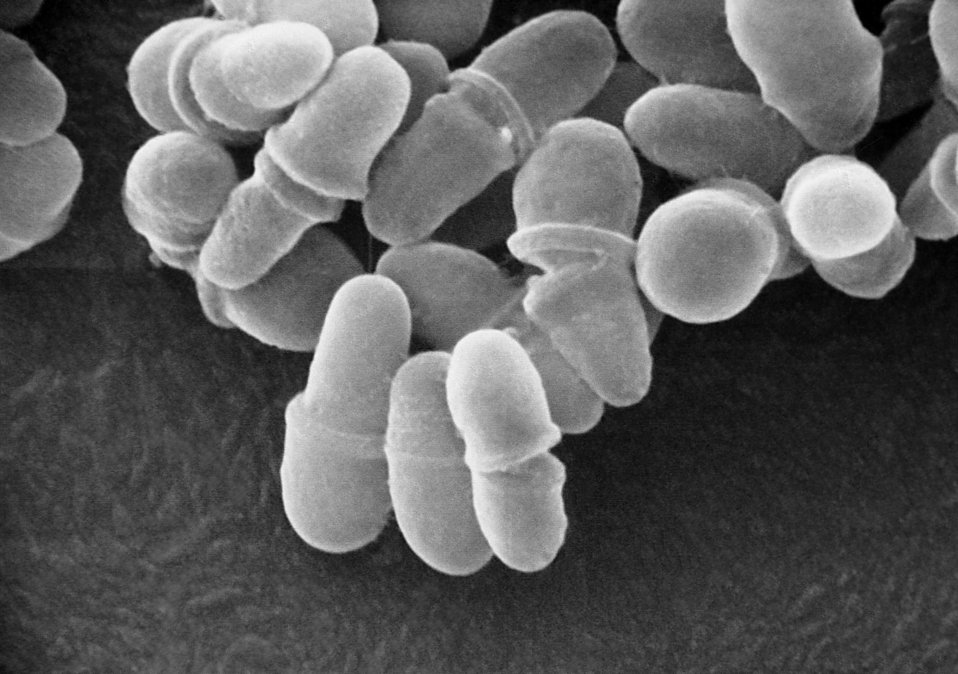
Scanning electron micrograph (SEM) of Malassezia lipophilis.